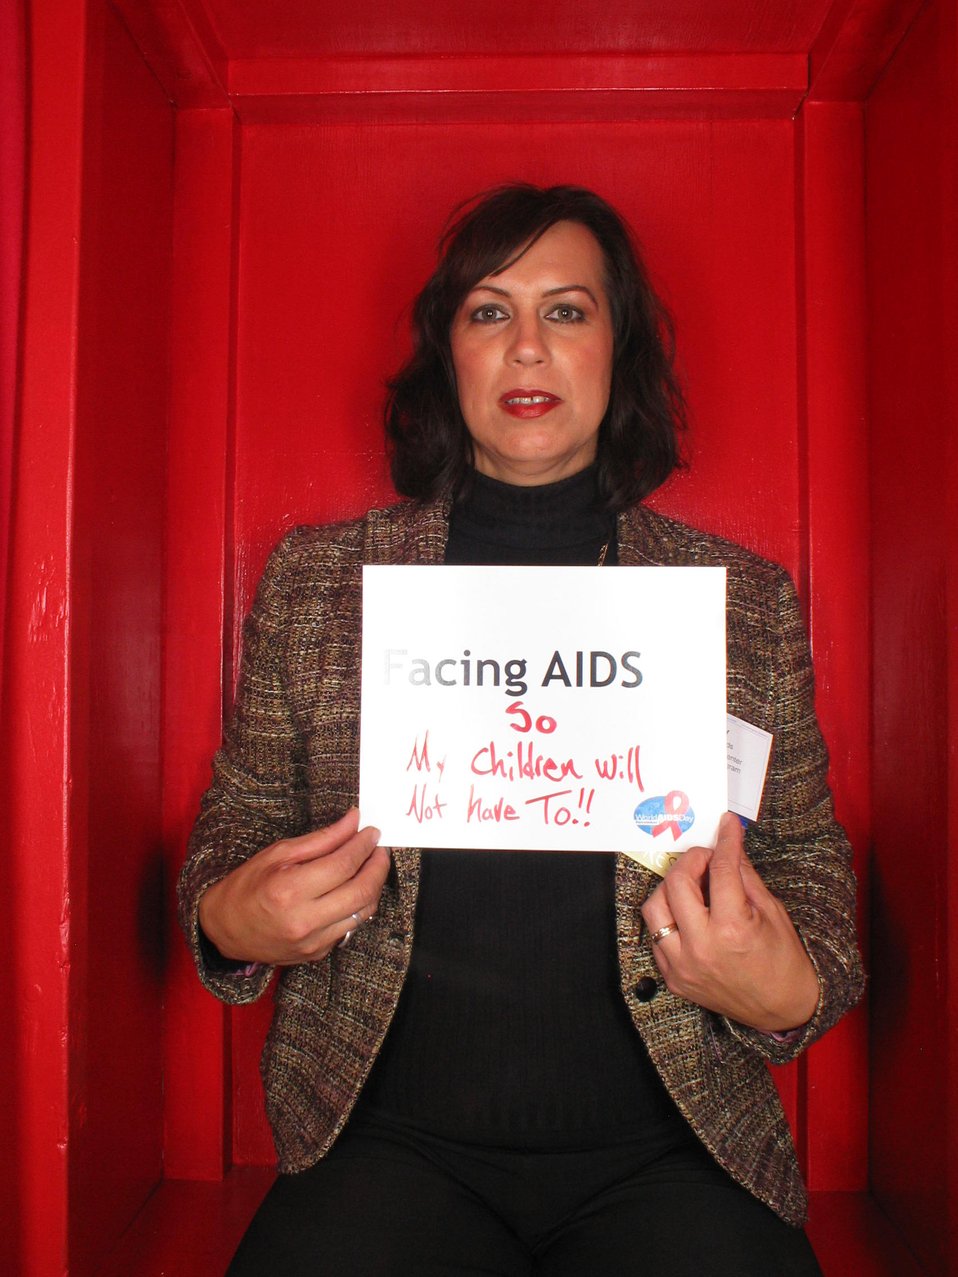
Facing AIDS so my children will not have to.